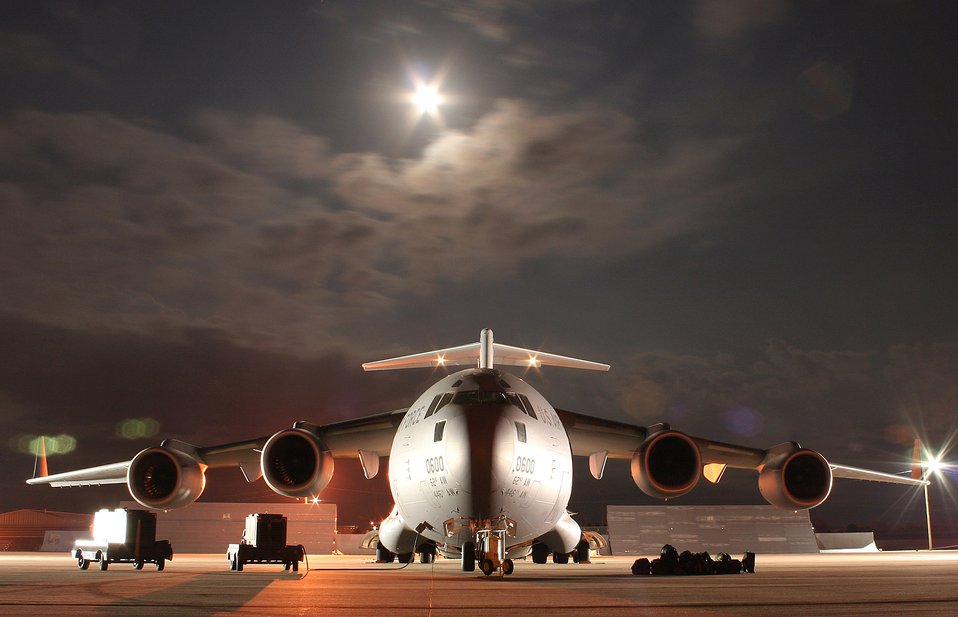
Mission by moonlight

A C-17 Globemaster III, belonging to 62nd Airlift Wing, McChord Air Force Base, Wash., rests on the tarmac at McConnell AFB, Kan., Nov. 4 as the crew and members of the 22nd Logistics Readiness Squadron load the aircraft before a mission to Southwest Asia.